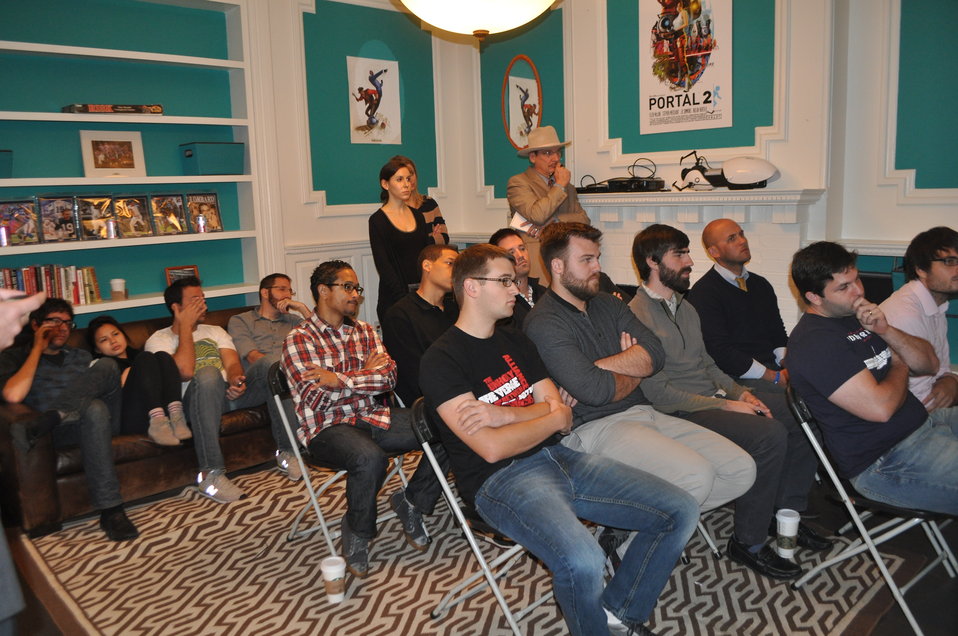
Broadband Challenges and Opportunities, at Vox Media